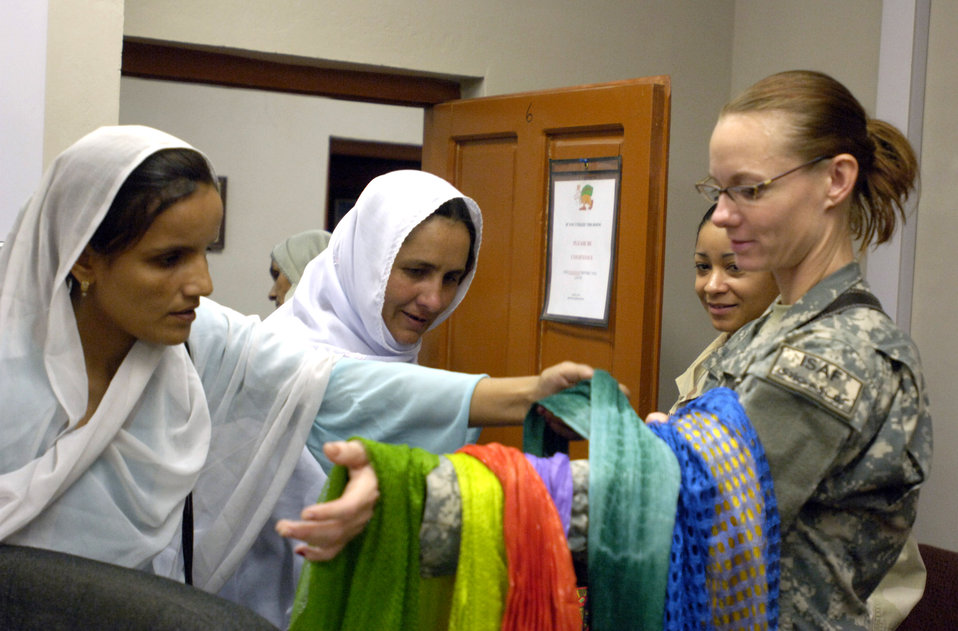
Making new friends

Capt. Heather Kekic offers shawls as gifts to Afghan women who attended a tea Sept. 5 at Forward Operating Base Mehtar Lam, Afghanistan. Captain Kekic is a public affairs officer deployed from Randolph Air Force Base, Texas.